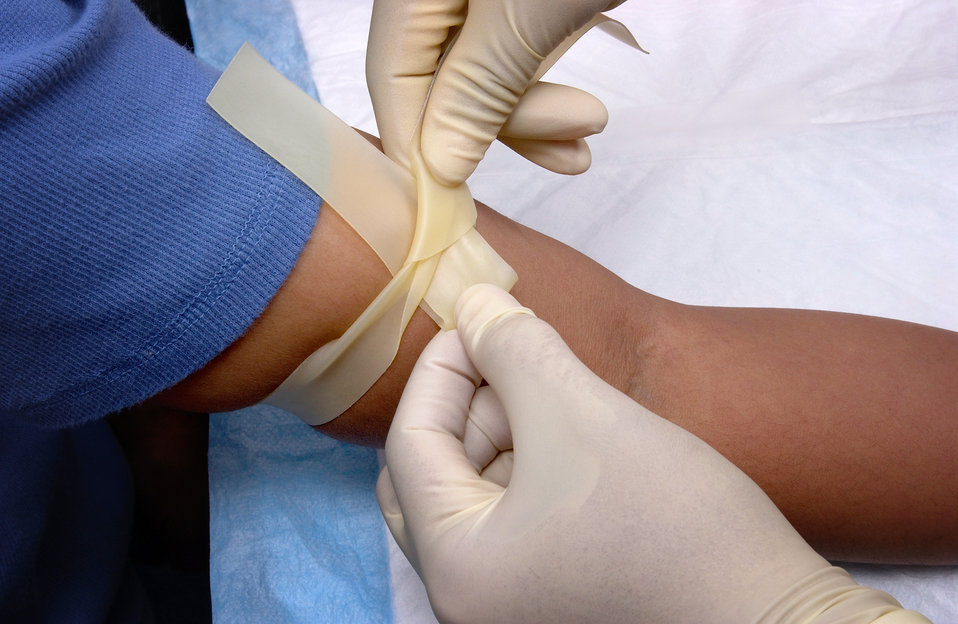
This image depicts a trained phlebotomist, i.e., a technician skilled in the practice of drawing blood from a patient, correctly placing a tourniquet proximal to the intended venipuncture site on this patient's right antecubital fossa. This image is the third in a series of 19 images outlining the steps involved in extracting blood during the venipuncture process.